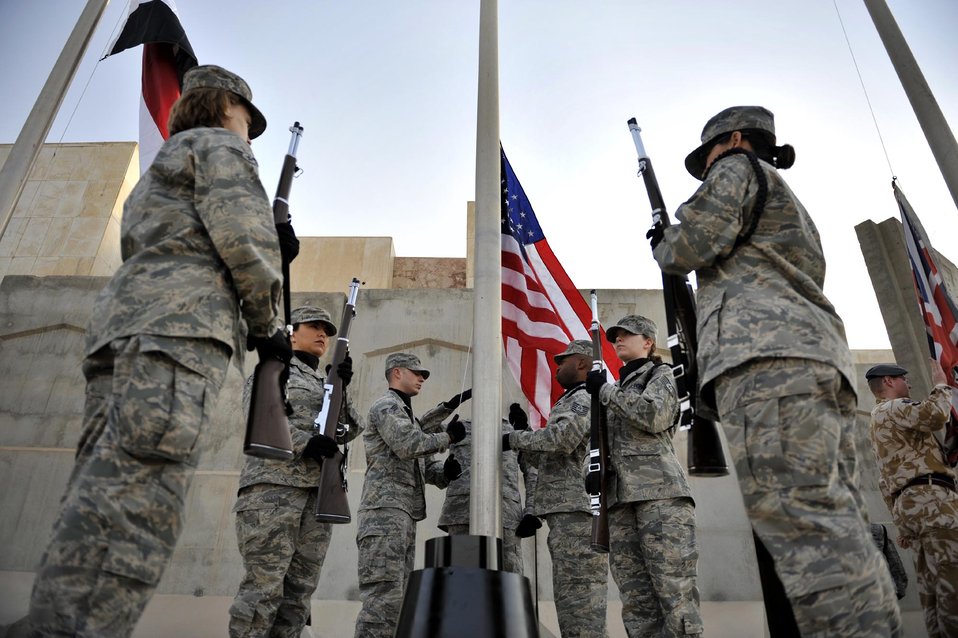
One moment in time changes the course of history

Members of the honor guard raise the flag in an early-morning ceremony on the seven-year anniversary of the terrorist attacks of Sept. 11, 2001, before lowering it to half-mast in memory of those who lost their lives Sept. 11 at Sather Air Base, Iraq.